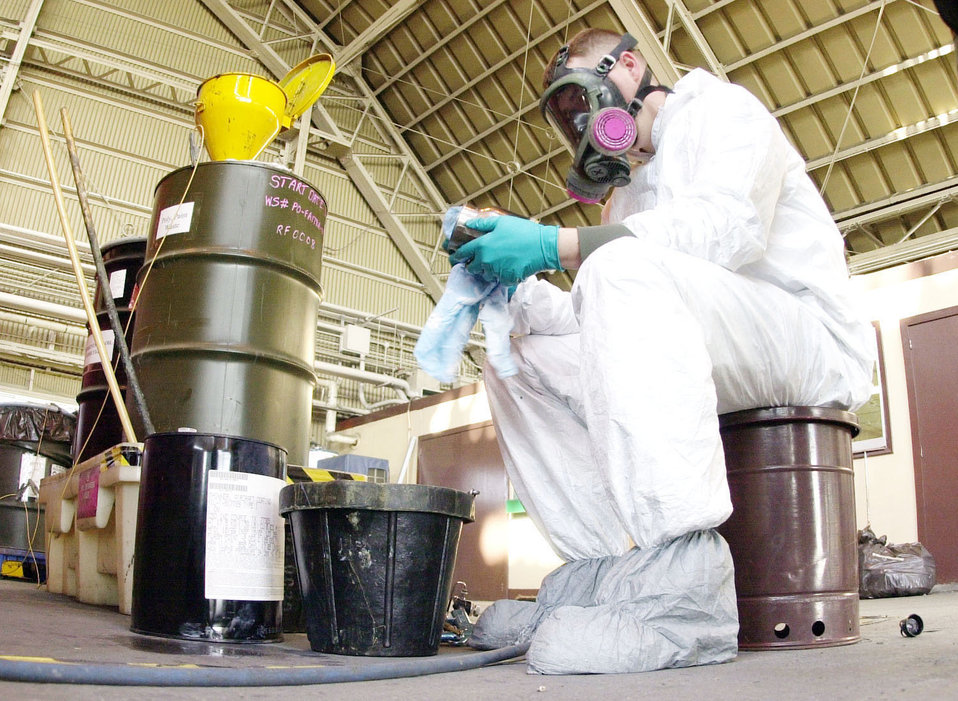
Refurbish

YOKOTA AIR BASE, Japan -- Airman 1st Class Christopher Breaux from the 374th Maintenance Squadron/Refurbishment Flight, cleans a spray cup with solvents during a during inspection of a C-130 aircraft here. The aircraft is undergoing a complete interior/exterior maintenance check-up for corrosions, deteriorating parts, and also structural damage.